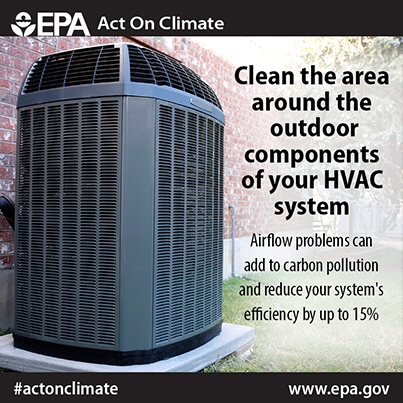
Clean the machine. By tidying up components of your HVAC system, you can increase system efficiency and reduce carbon pollution. #ActOnClimate http://www.epa.gov/earthday/actonclimate/